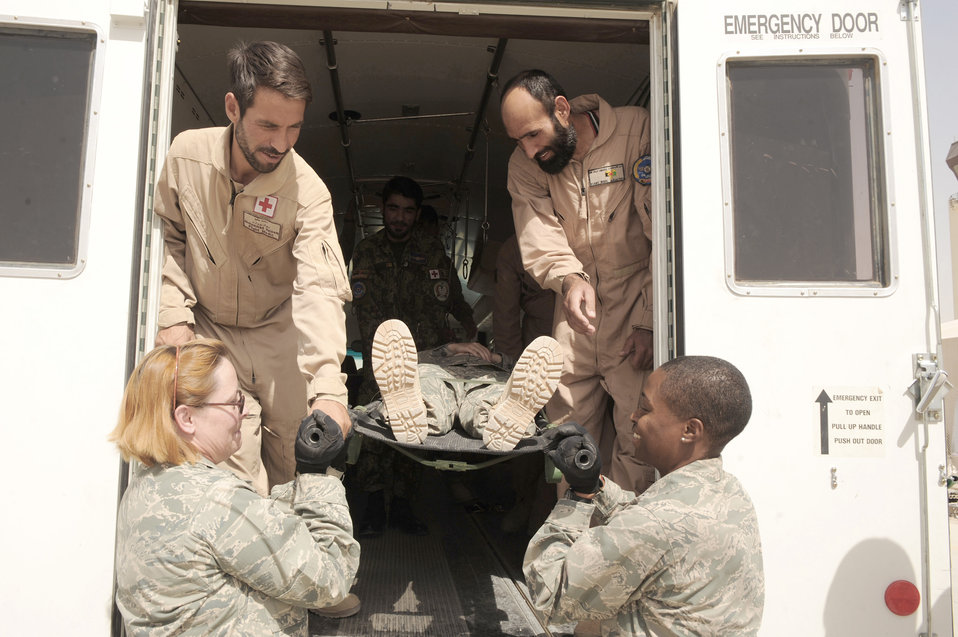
Medics showcase patient care concepts to Afghan airmen

Afghan Air Force flight medics transfer a simulated patient from an ambulance to members of the 451st Expeditionary Aeromedical Evacuation Squadron Contingency Aeromedical Staging Facility during an orientation Sept. 8, 2010, at Kandahar Airfield, Afghanistan.